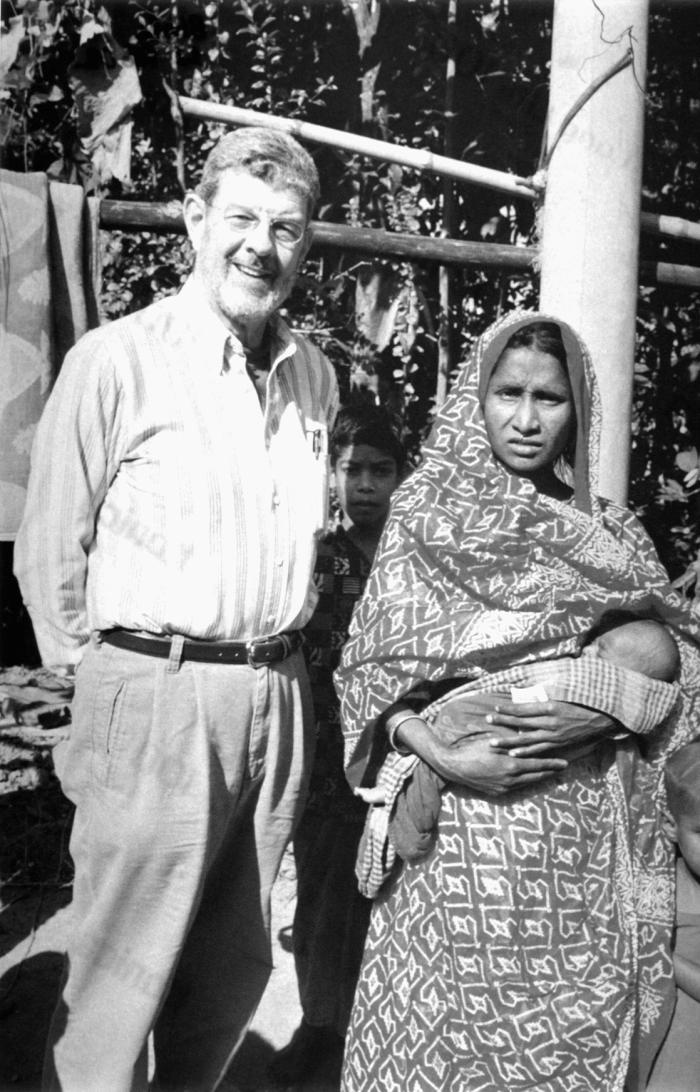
This photograph was captured in 2000, and what makes it so intriguing is that the Bangladesh woman holding her child is Rahima Banu, who 25 years previously, at the age of 2 years, was recorded as the last known, naturally-occurring case of smallpox, i.e., variola major, in the world. Standing next to Ms. Banu was former E.I.S. officer Joel G. Breman, M.D., D.T.P.H.